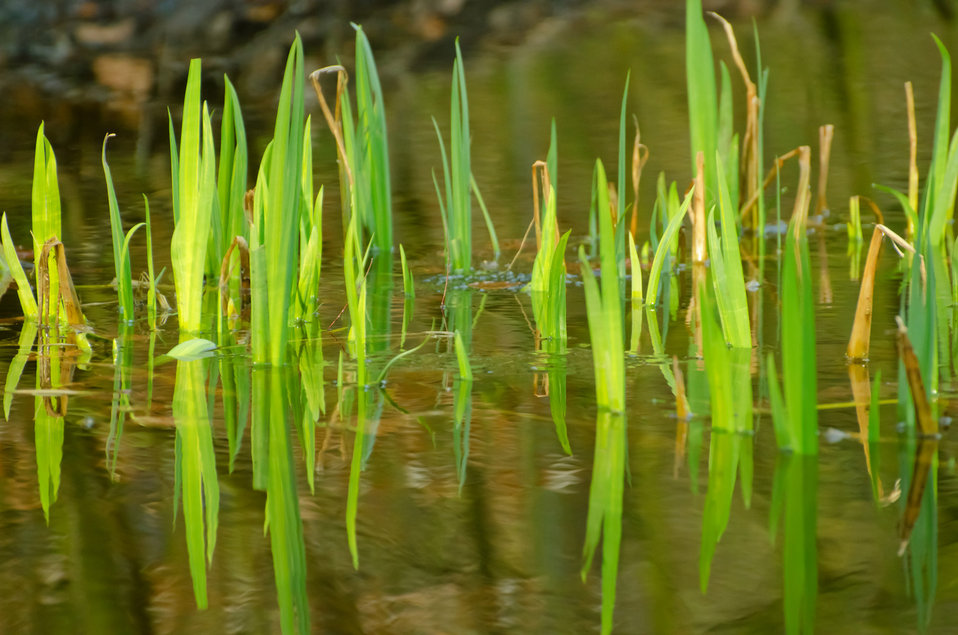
Water-plant

Green water-plant.